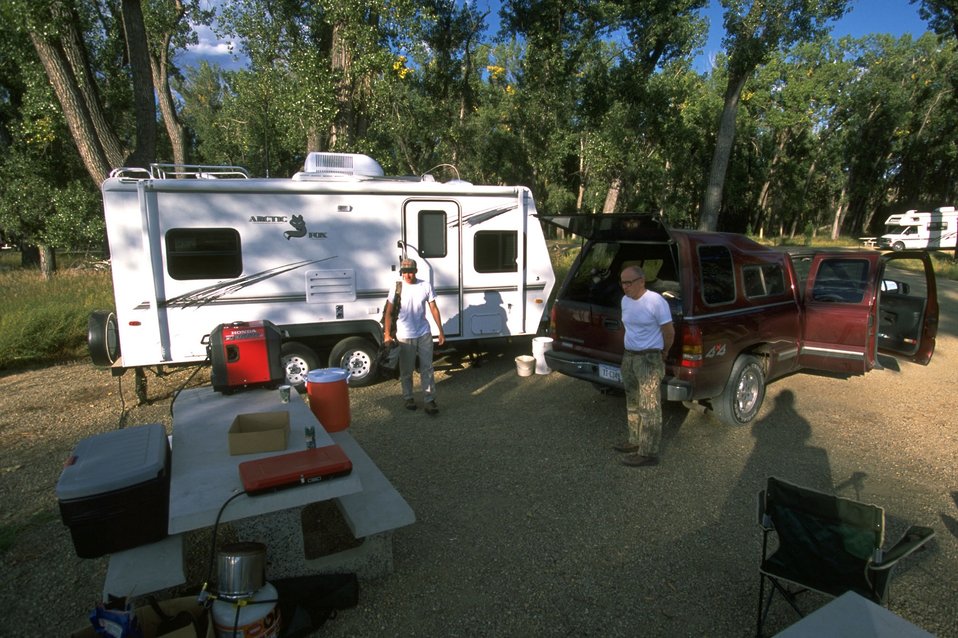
Campers at Kipp Recreation Area